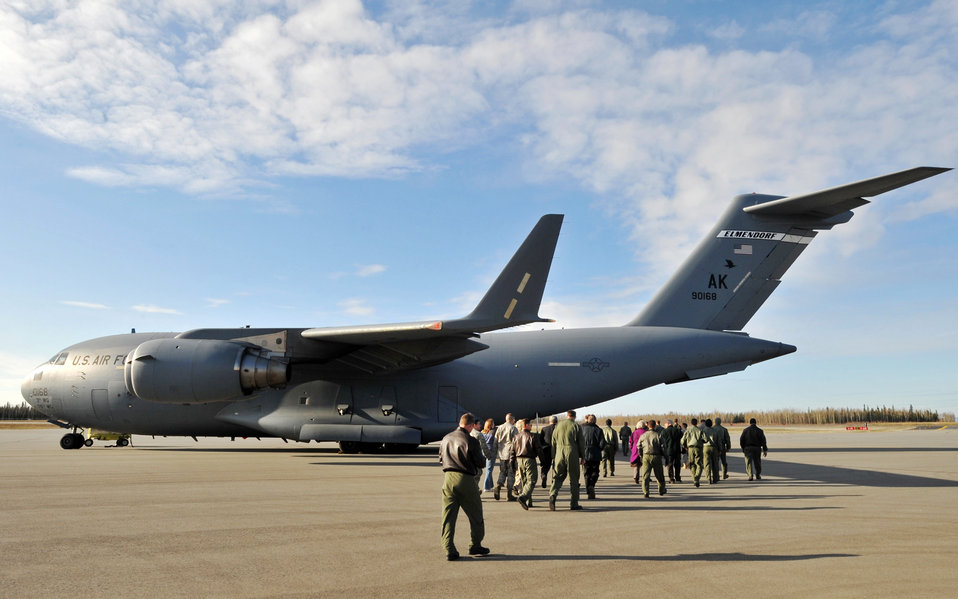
Allen Army Airfield to save Air Force money, provide tactical training

An audience gathered for a ribbon cutting ceremony to view a C-17 Globemaster III from the 517th Airlift Squadron Sept. 29, 2009, at a newly opened runway on Allen Army Airfield, Alaska.